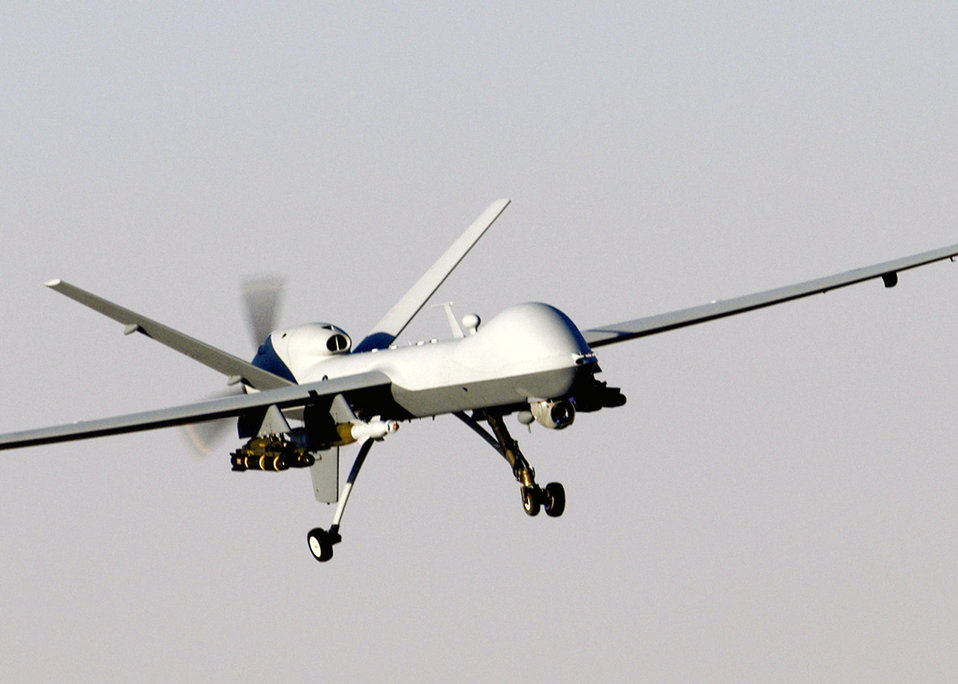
Airpower summary: Reapers target enemy forces

An MQ-9 Reaper unmanned aircraft prepares to land after a mission in support of Operation Enduring Freedom in Afghanistan. The Reaper has the ability to carry both precision-guided bombs and air-to-ground missiles.